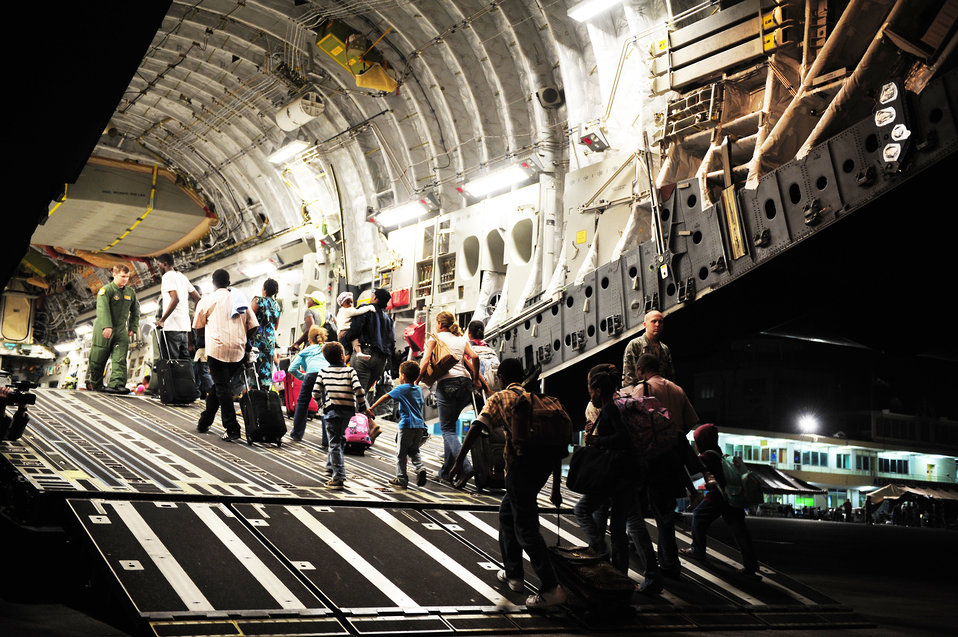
Haiti Earthquake Relief

Haitian-Americans board a C-17 Globemaster III Jan. 18, 2010, at Toussaint L'Ouverture International Airport, Port-au-Prince, Haiti. The C-17 crew is assigned to the 729th Airlift Squadron at March Air Reserve Base, Calif. The aircraft is from the 452nd Air Mobility Wing at March ARB.